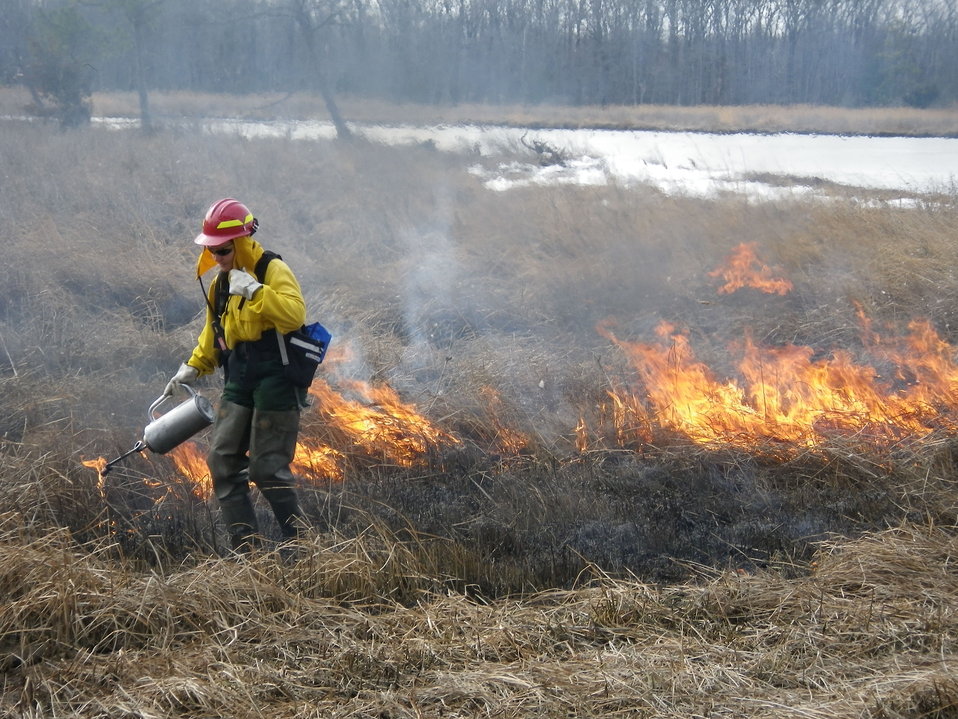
Fire biologist lights controlled burn

March, 2011, Eastern Neck National Wildlife Refuge, Maryland. Laura Mitchell, U.S. Fish and Wildlife Service Northeast Regional Biologist, lights a controlled burn to maintain wildlife hbitat in a brackish marsh. Fire is one of many tools biologists use to promote native plants and exclude invasive ones.